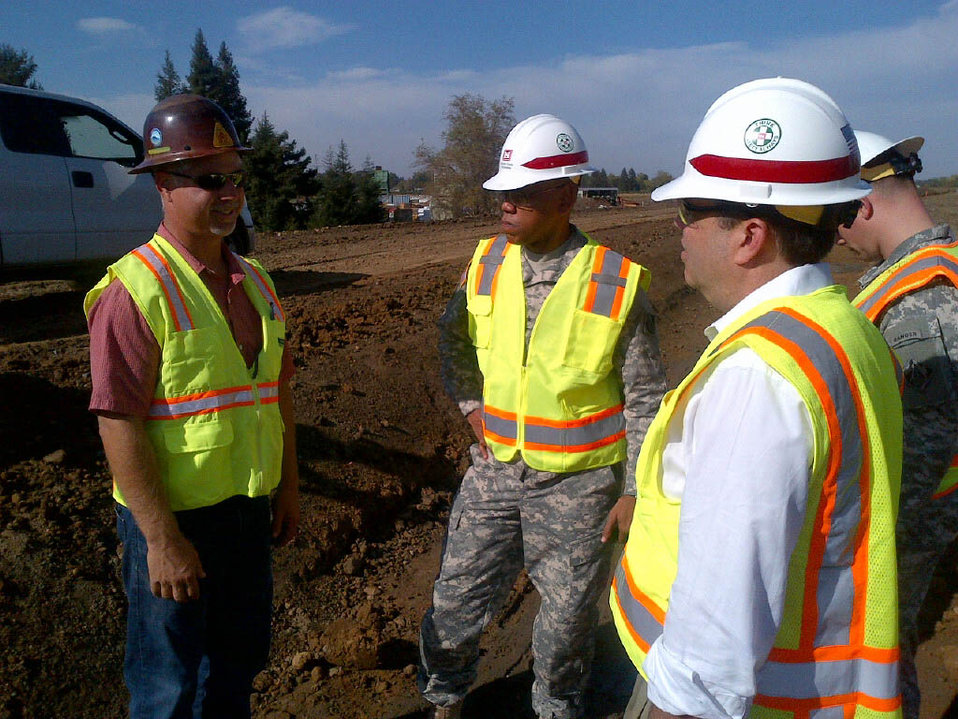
Brig. Gen. Turner tours Sutter levees

Brig. Gen. Dave Turner (center), commander of the U.S. Army Corps of Engineers South Pacific Division, tours levee work currently underway in Sutter County, Calif. Oct. 16, 2013. The Sutter Butte Flood Control Agency project will eventually reduce flood risk along a 41-mile stretch, from just below the Oroville Dam to Yuba City.